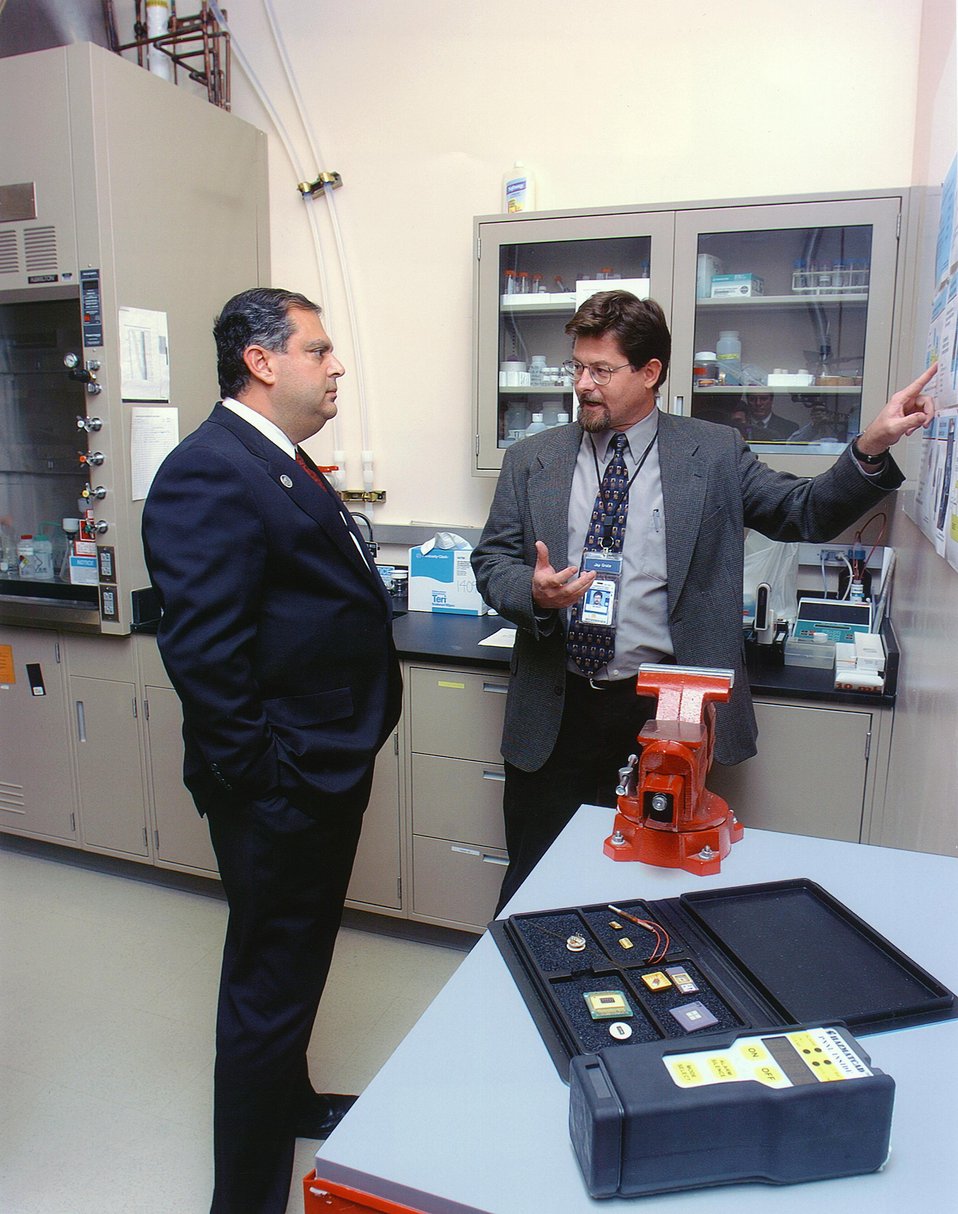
SECRETARY OF ENERGY SPENCER ABRAHAM BEING BRIEFED ON CHEMICAL SENSOR DEVELOPED AT PNNL.

DR. JAY GRATE, INTERFACIAL CHEMISTRY AND ENGINEERING AT PNNL EXPLAINS TO SECRETARY ABRAHAM HOW A CHEMICAL SENSOR DEVELOPED AT DOE'S ENVIRONMENTAL MOLECULAR SCIENCES LAB HAS BEEN INCORPORATED INTO MICROSENSOR SYSTEMS' HAZMATCAT HAND HELD CHEMICAL AGENT DETECTOR. THE SENSOR USES A NOVEL POLYMER MATERIAL THAT ABSORBS NERVE AGENT MOLECULES FROM THE AIR IN TRACE AMOUNTS, THEREFORE IDENTIFYING A HAZARD BEFORE IT SPREADS.